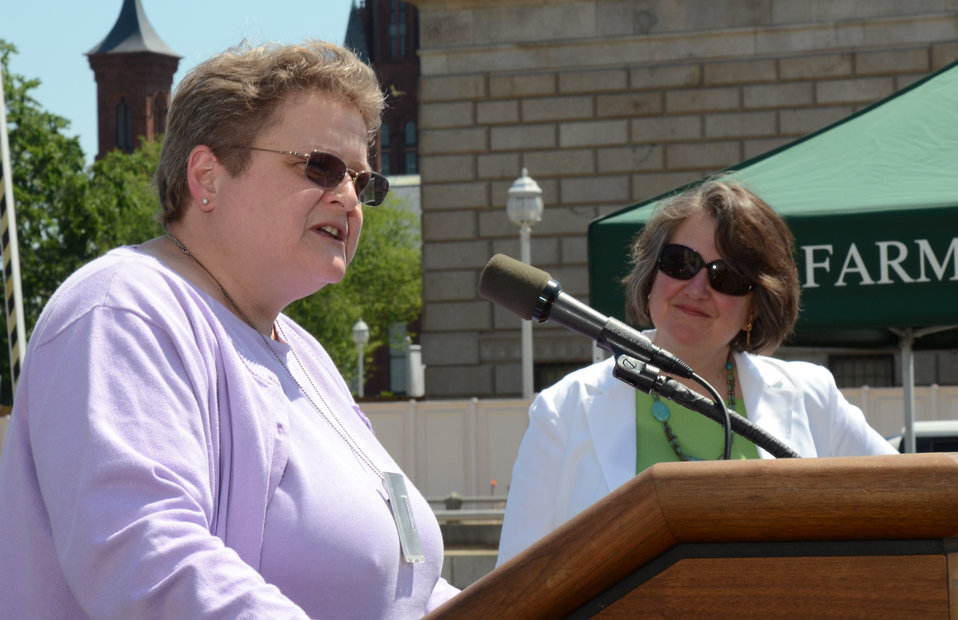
Cheryl Cook, Acting Chief Information Officer, U.S. Department of Agriculture introduces Agriculture Deputy Secretary Kathleen Merrigan at the USDA kickoff event for Feds Feed Families at the U.S. Department of Agriculture Farmers Market in Washington, D.C., on Friday, June 8, 2012.